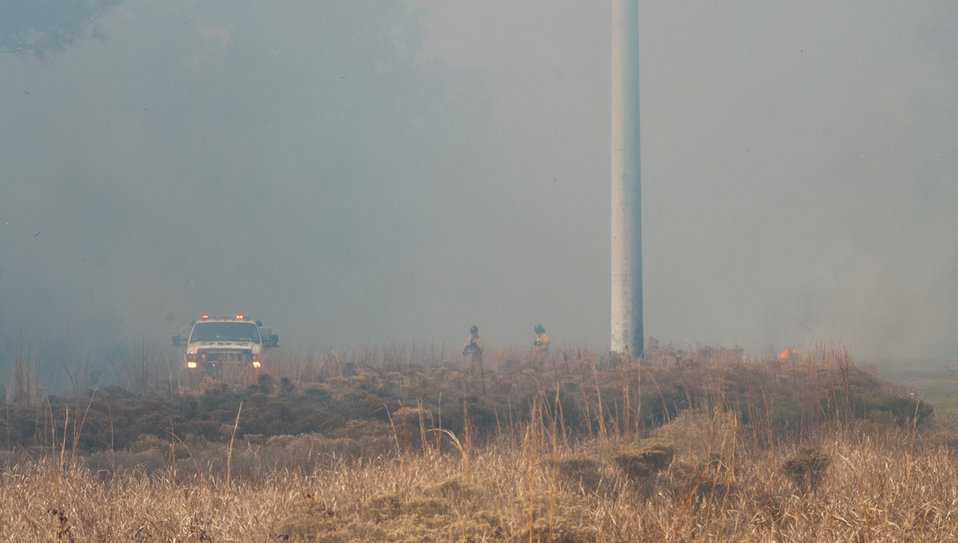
Lake Woodruff Volusia 5 Prescribed Fire Febuary 2014

USFWS Firefighters Kris Kasper and Paul Koch walk through the smoke while checking the fireline. On February, 12 2014 USFWS firefighters conducted a 137 acre prescribed fire at Lake Woodruff NWR to reduce the wildfire risk and enhance the wildlife habitat on the southern end of the refuge.